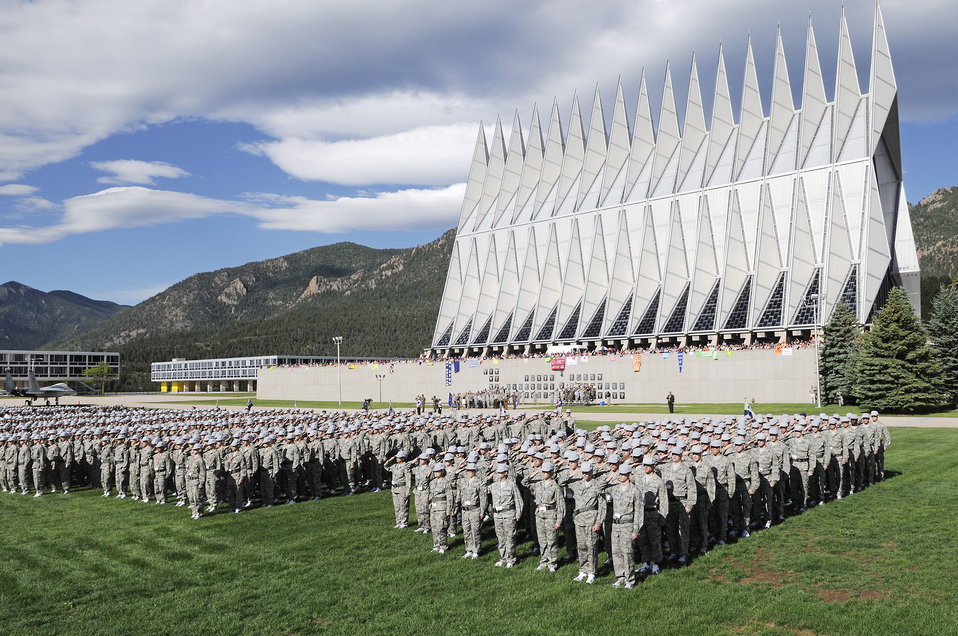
Welcome to the Academy

More than 1,300 basic cadets salute during their first reveille formation June 26 at the U.S. Air Force Academy in Colorado Springs, Colo.